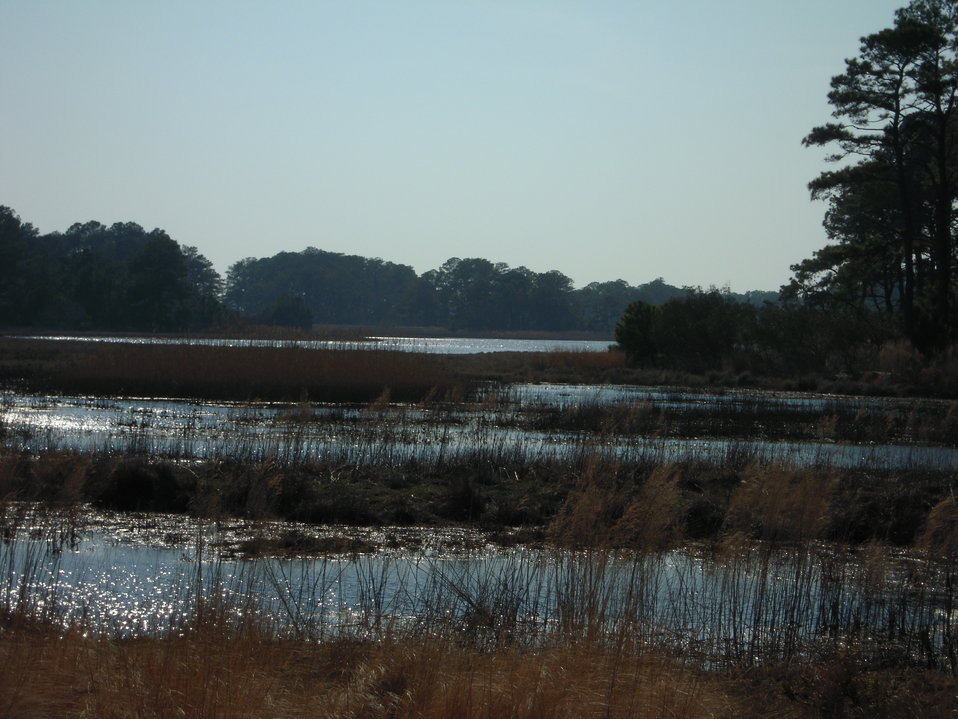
Marsh at Chincoteague National Wildlife Refuge, located at the southern end of Assateague Island, Virginia.